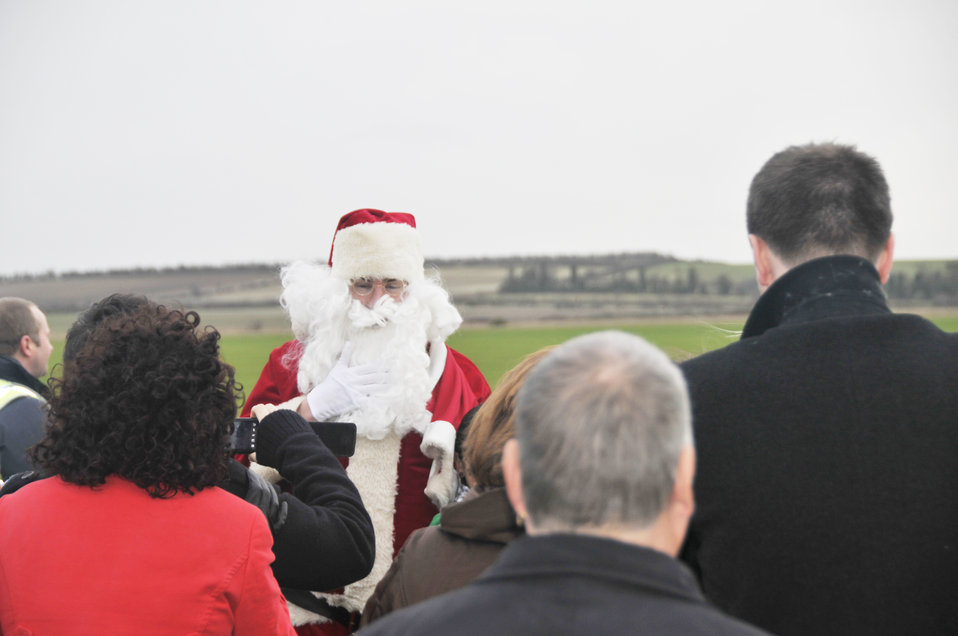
Lakenheath Airmen held Christmas party for special children

Santa Claus greets people Dec. 5, 2009, at the Imperial War Museum at Duxford, England. Volunteers from the 48th Fighter Wing from Royal Air Force Lakenheath, hosted a party at the museum for terminally and seriously ill children.